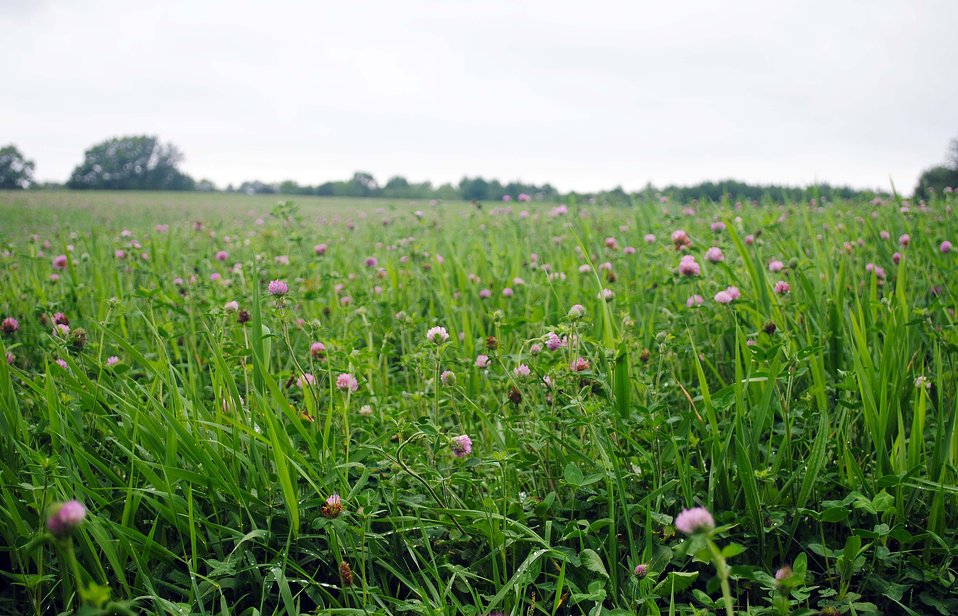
Field of Red Clover

Fort River Division of the Silvio O. Conte National Wildlife Refuge, Hadley, MA.